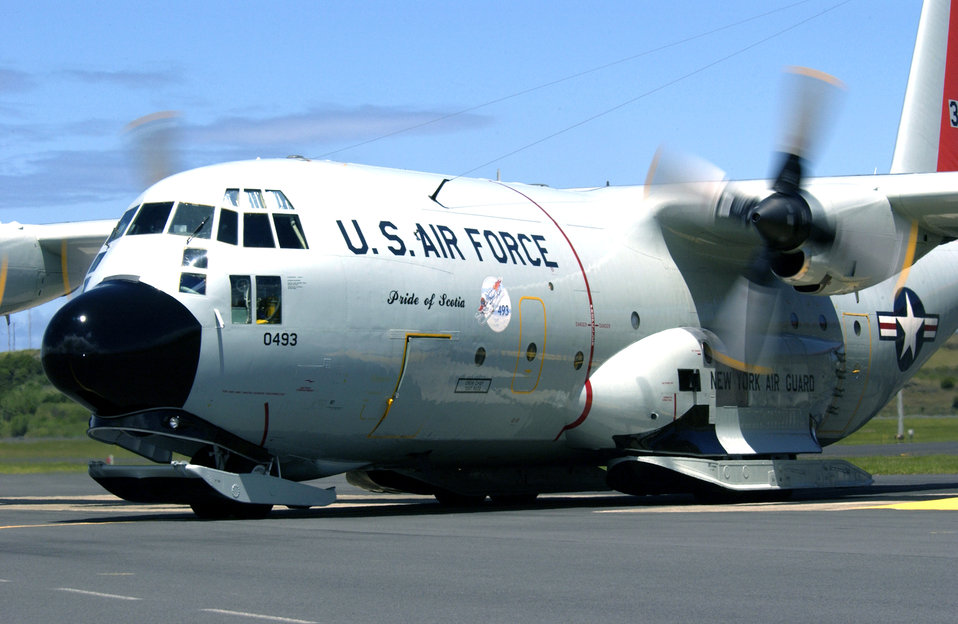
Pride of Scotia

LAJES FIELD, Azores -- An LC-130H called the